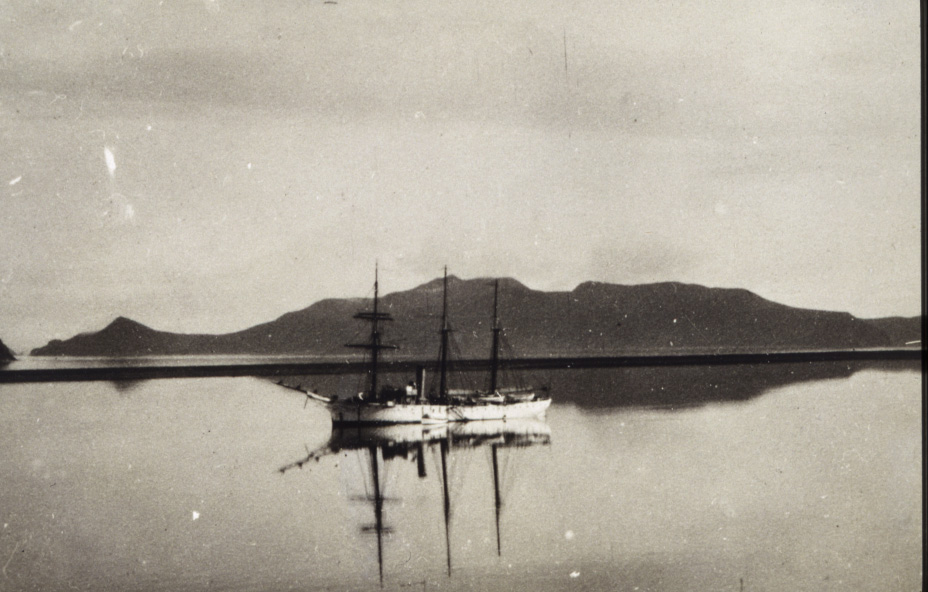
Coast and Geodetic Survey Steamer PATTERSON. In service 1884-1919. Pacific service. A still Alaska morning.